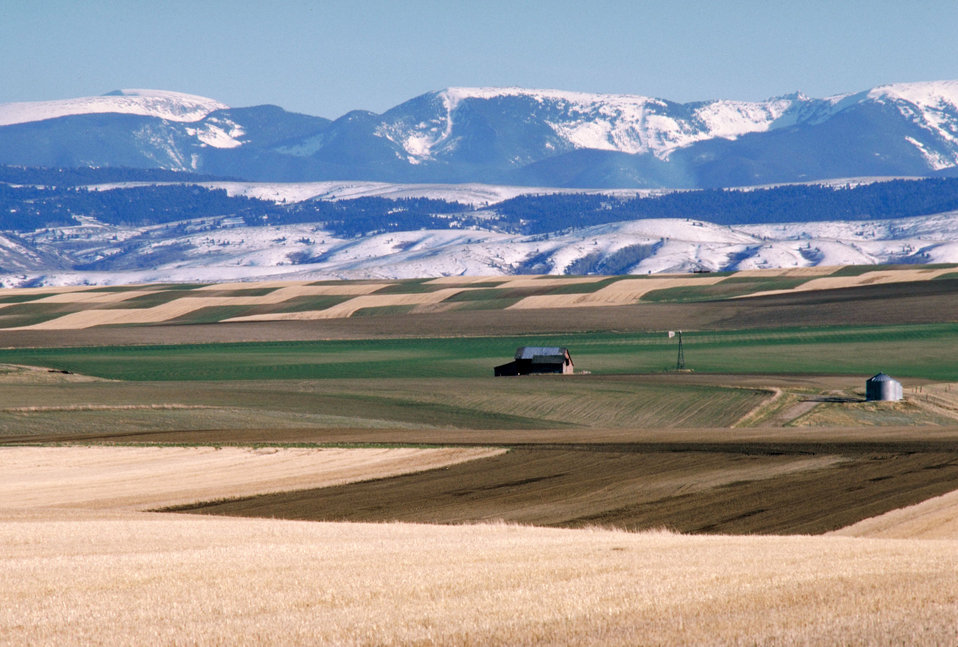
Good risk management tools aid in conservation efforts and help protect beautiful views like this for the next generation.